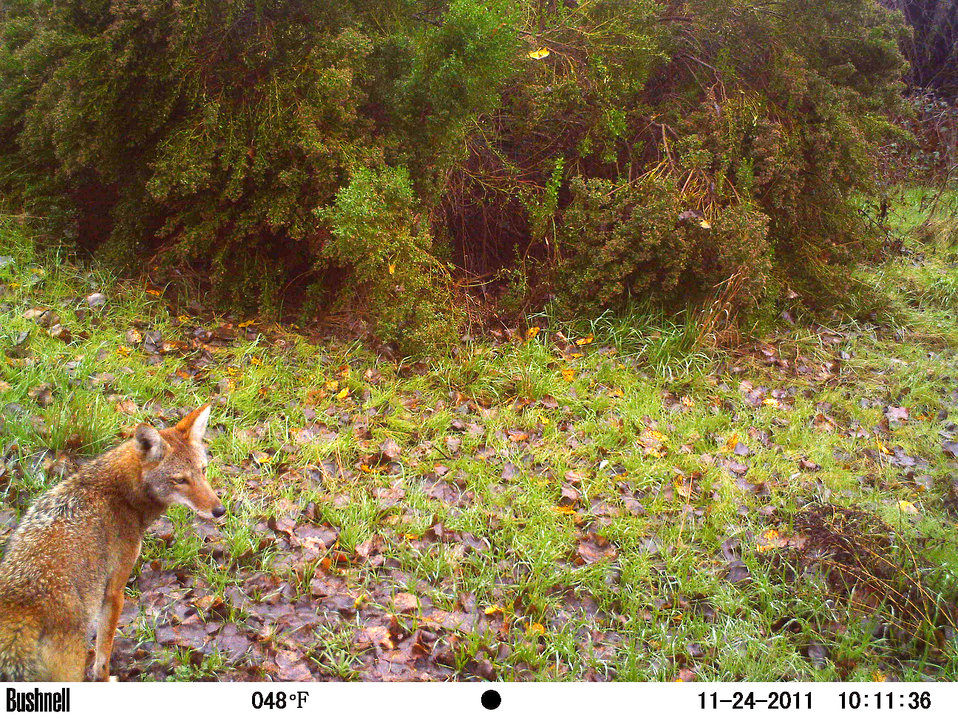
red fox

trail camera photo
Sacramento River National Wildlife Refuge, CA